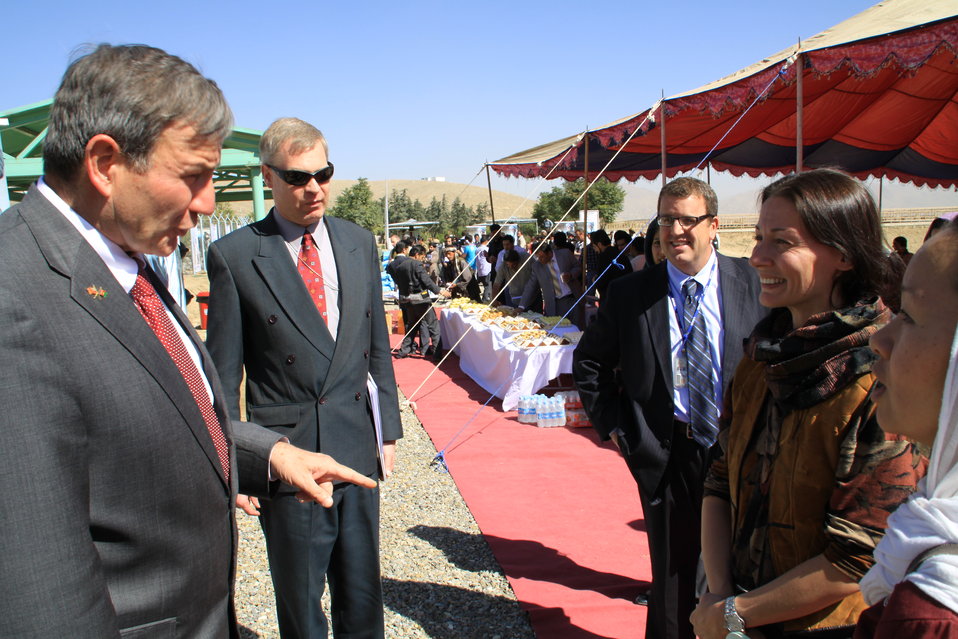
AVIPA Plus Wheat Seed Distribution 101005

US Ambassador Karl Eikenberry and USAID Acting Mission Director Kevin Brownawell joined the Minister of Agriculture, Irrigation and Livestock, H.E. Minister Mohammed Rahimi in signing a Memorandum of Understanding and distributing vouchers to area farmers for wheat and fertilizer.

US Ambassador Karl Eikenberry and USAID Acting Mission Director Kevin Brownawell joined the Minister of Agriculture, Irrigation and Livestock, H.E. Minister Mohammed Rahimi in signing a Memorandum of Understanding and distributing vouchers to area farmers for wheat and fertilizer.

US Ambassador Karl Eikenberry and USAID Acting Mission Director Kevin Brownawell joined the Minister of Agriculture, Irrigation and Livestock, H.E. Minister Mohammed Rahimi in signing a Memorandum of Understanding and distributing vouchers to area farmers for wheat and fertilizer.